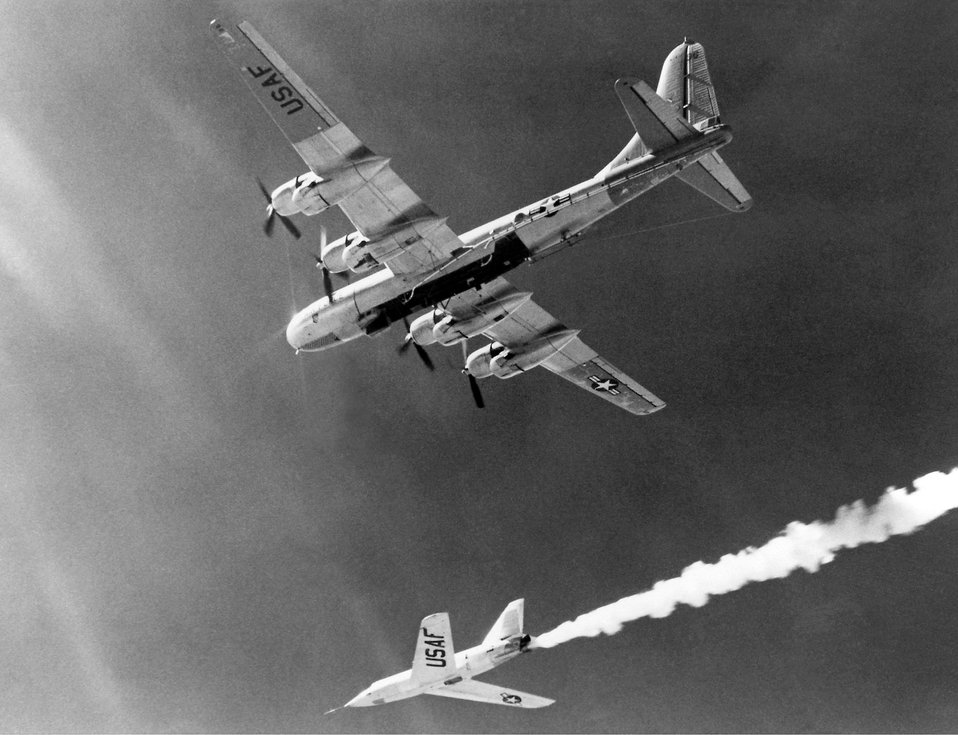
X-2 rocket plane dropped from mothership

An X-2 rocket plane is dropped from the B-50 Superfortress mothership in the mid-1950s.